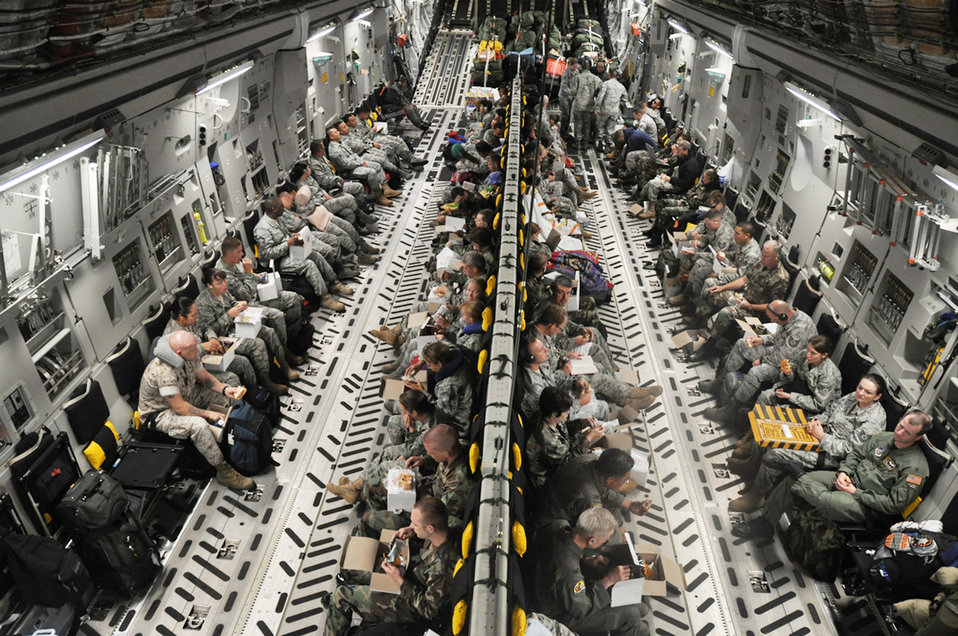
Help is on the way

Medical and engineering Airmen from various bases across the Air Force get some rest aboard a C-17 Globemaster III July 15 en route to Kupang, Indonesia. An aircrew from the Hawaii Air National Guard's 204th Airlift Squadron at Hickam Air Force Base, Hawaii, delivered the people and equipment for the operation.